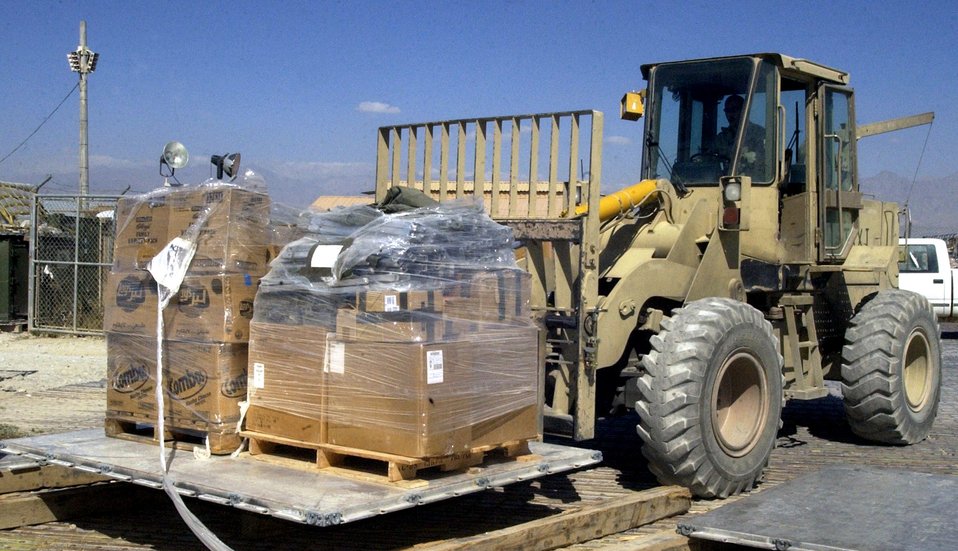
Loading up

BAGRAM AIR BASE, Afghanistan -- Airman 1st Class Gregory Viruet picks up a pallet of cargo of earthquake relief supplies bound for Pakistan. The first relief supplies from the United States were ready for departure aboard a C-17 Globemaster III here less than 48 hours after the devastating earthquake left thousands dead and thousands more injured. More than 134,000 pounds of food, water, cots, medical supplies and American Red Cross items have been flown out of Bagram headed for Pakistan. Airman Viruet is a short takeoff and landing coordinator with the 455th Expeditionary Logistics Readiness Squadron. He is deployed from McChord Air Force Base, Wash.